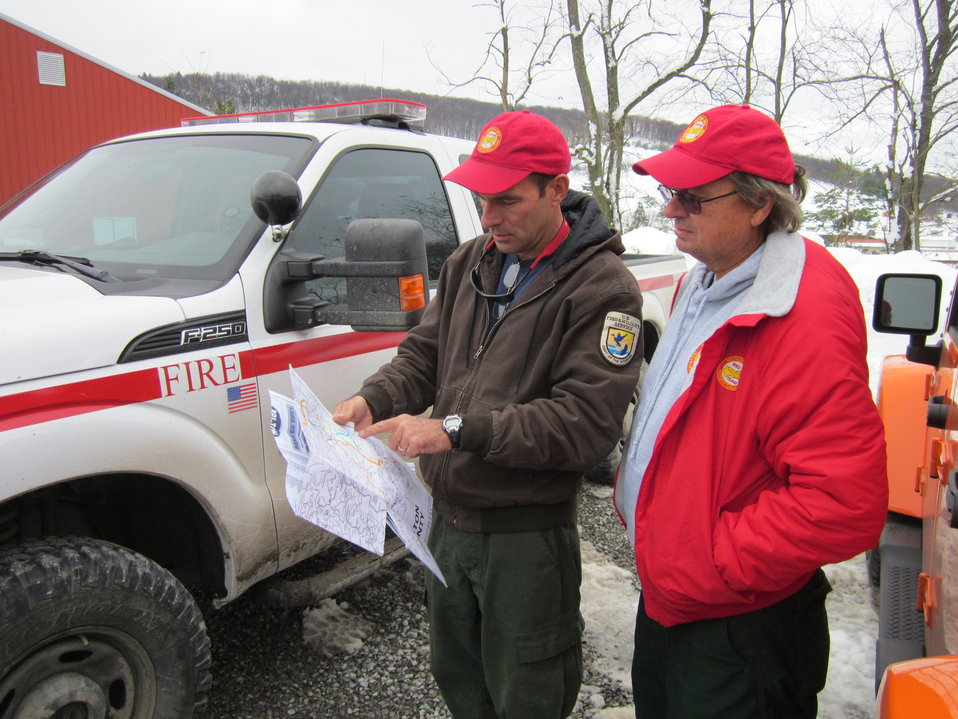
U.S. Fish and Wildlife Service employees help West Virginia

Terra Alta, WV, November 4, 2012: Division Supervisor Greg Titus (left) briefs Tony Wilder, Incident Commander of the Southern Area Type 1 Red Incident Management Team on saw crew work in Preston County. The Red Team supervised and supported three 20-person saw crews who worked with the National Guard to open over 200 miles f roads in Preston, Randolph, and Tucker Counties allowing access for residents and electric crews. Titus is a Division Forest Managment Officer based at St. Marks National Wildlife Refuge and Wilder is a fire management officer at Mississippi Sandhill Crane National Wildlife Refuge.